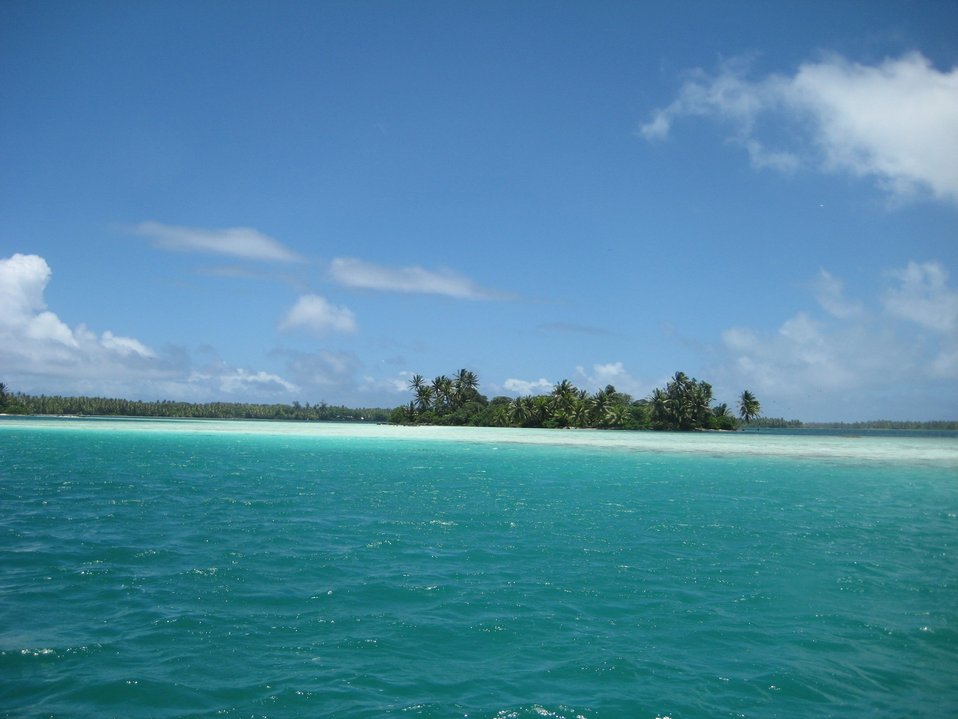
In the shallow aquamarine waters of the lagoon at Palmyra Island.